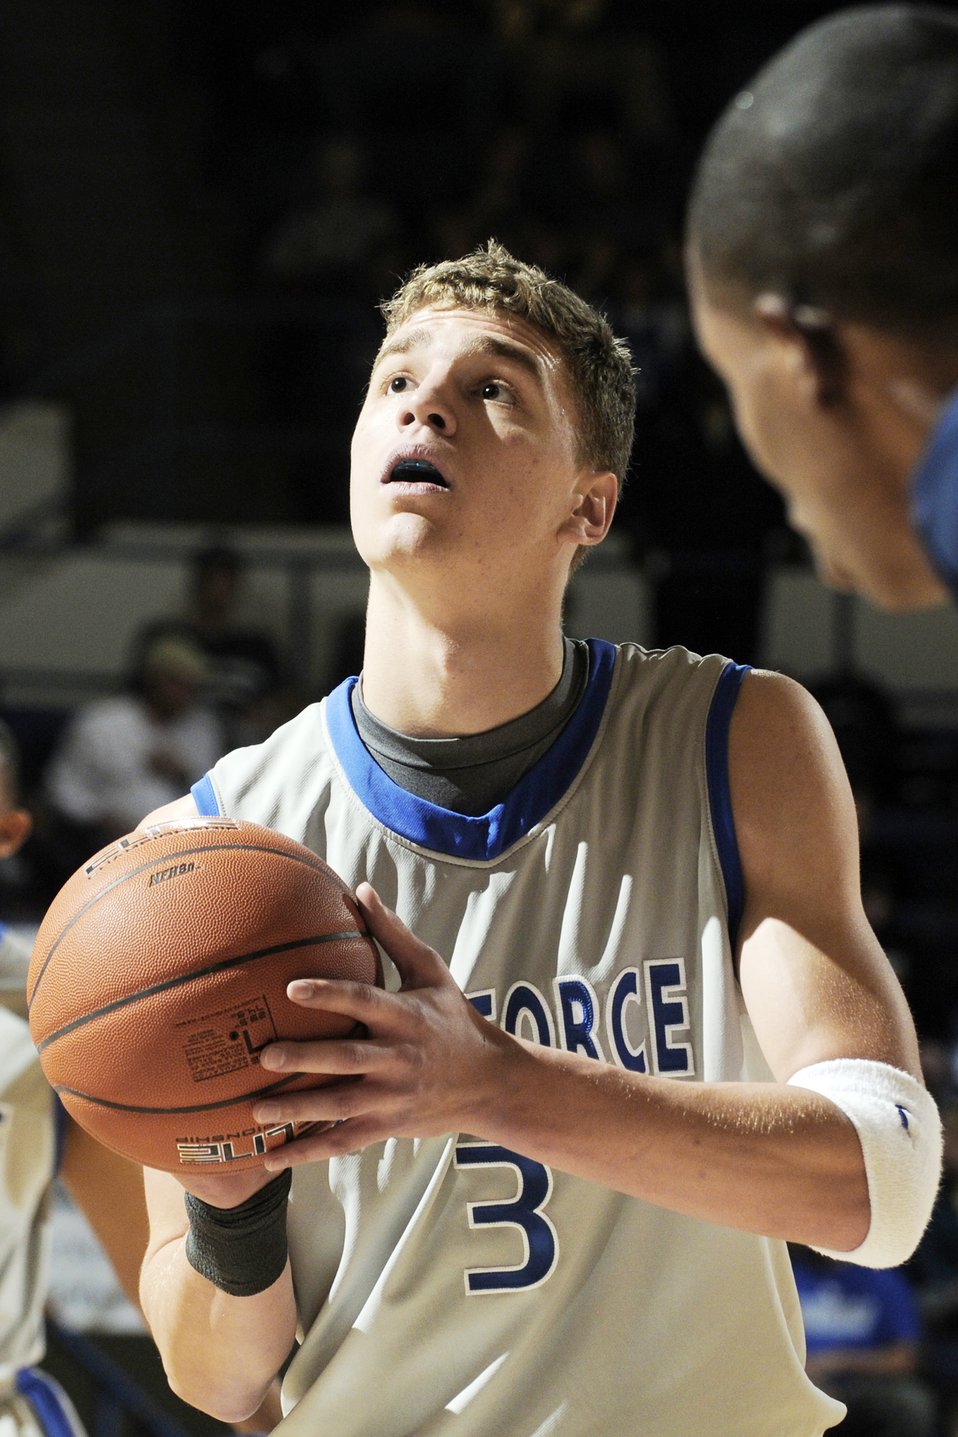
Falcons won 95-77

U.S. Air Force Academy, CO- Sophomore center Sammy Schafer lines up a foul shot against Dickinson State during the Reggie Minton Air Force Classic at Clune Arena Nov 20. The Falcons won 95-77, but finished the tournament in 2nd place after a 70-46 loss to Northern Colorado in the championship game.